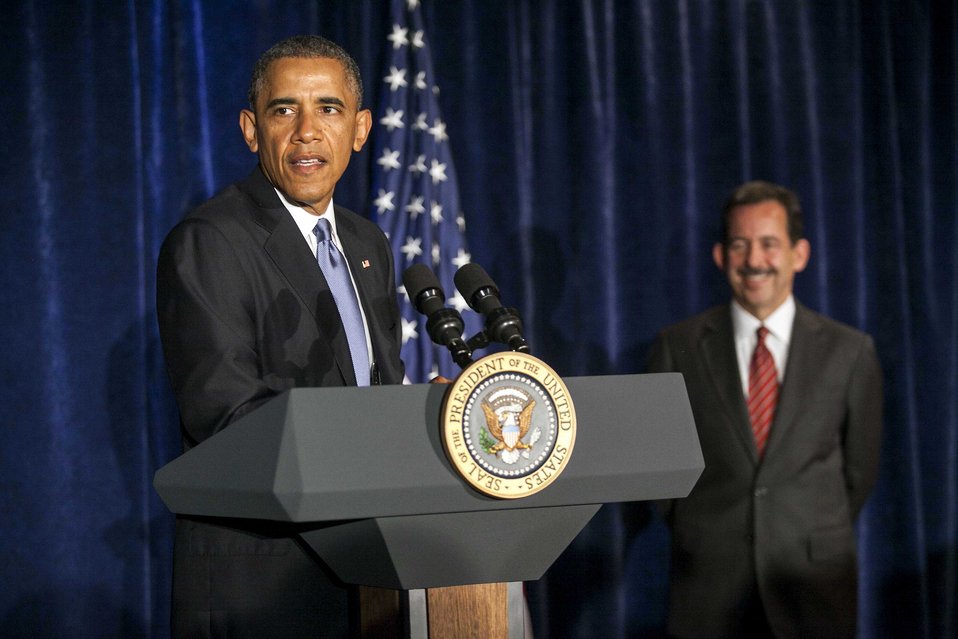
President Obama Speaks With Embassy Warsaw Staff and Families

U.S. President Barack Obama, flanked by U.S. Ambassador to Poland Stephen Mull, addresses the staff and families of the U.S. Embassy in Warsaw, Poland, on June 4, 2014. [U.S. Mission to Poland photo by Jakub Szymczuk]